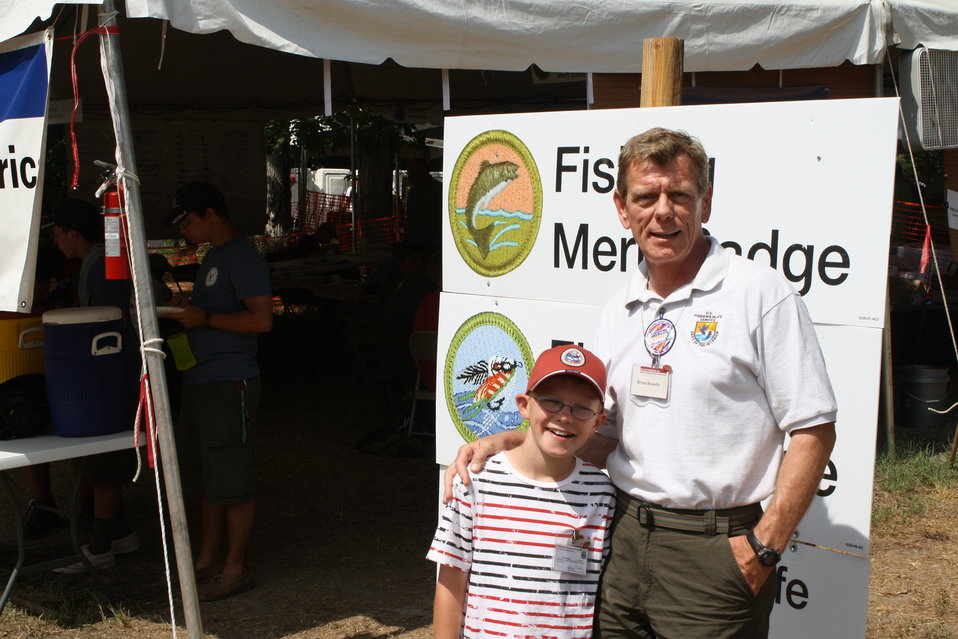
Boy Scout Jamboree 2010

Credit: Chris Poulin/ USFWS

Deputy manager Brian Braudis and his son John at Fish Hook Lake.